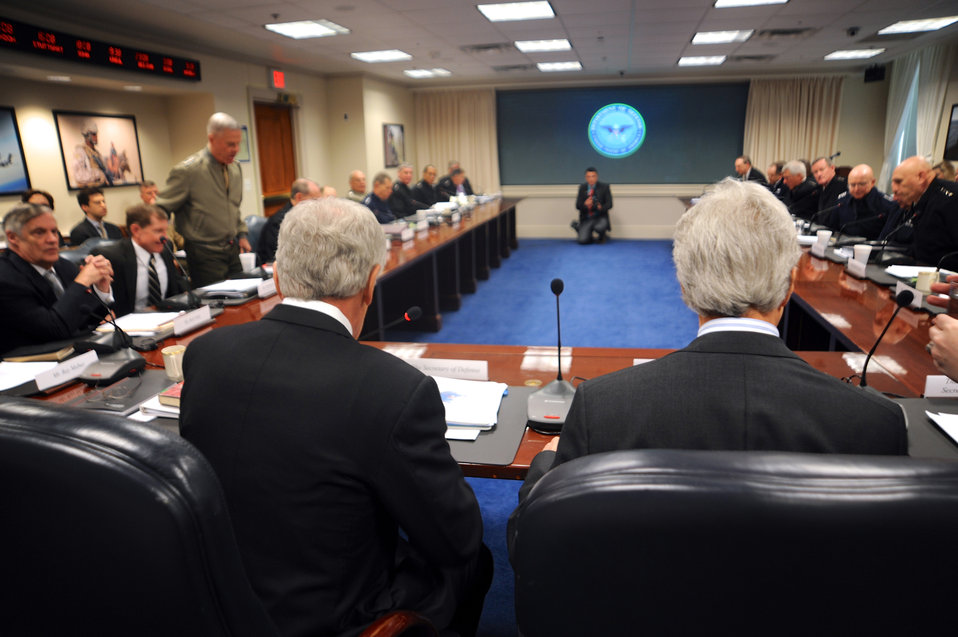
Secretary Kerry Joins Secretary Kerry at Briefing With Top Military Commanders

U.S. Secretary of State John Kerry sits with Defense Secretary Chuck Hagel as the two address the nation's top military commanders during a meeting at the Pentagon on January 16, 2014.